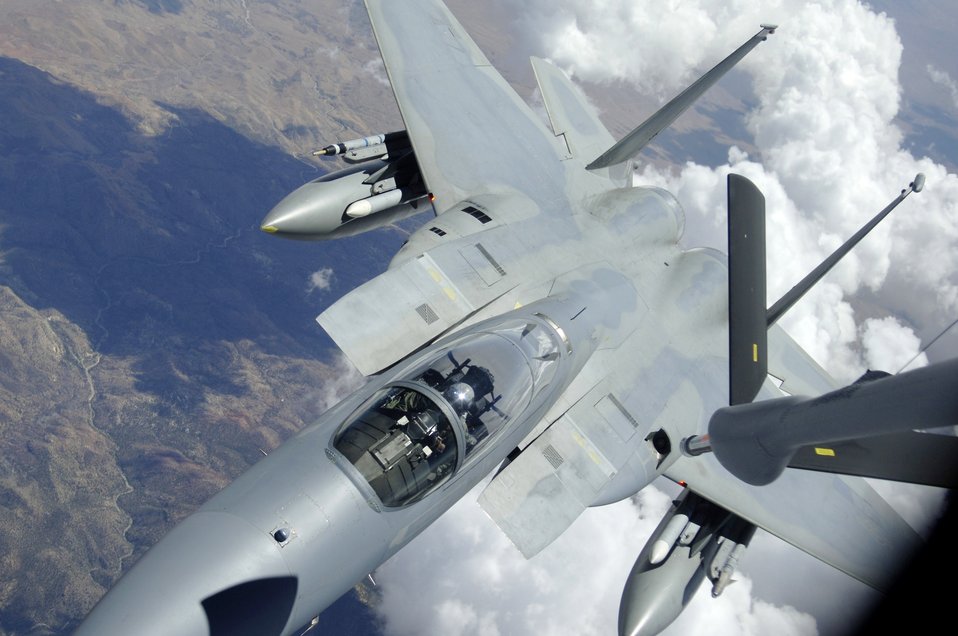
Refuelin' at the flag

An F-15 Eagle from Kadena Air Base, Japan, pulls away from a KC-135 Stratotanker after refueling during Red Flag, a two-week exercise that tests and trains servicemembers in real-time combat situations at Nellis Air Force Base, Nev. Red Flag is conducted over the Nevada Test and Training Range, which has more than 2.9 million acres of airspace. The KC-135 is based at MacDill AFB, Fla.